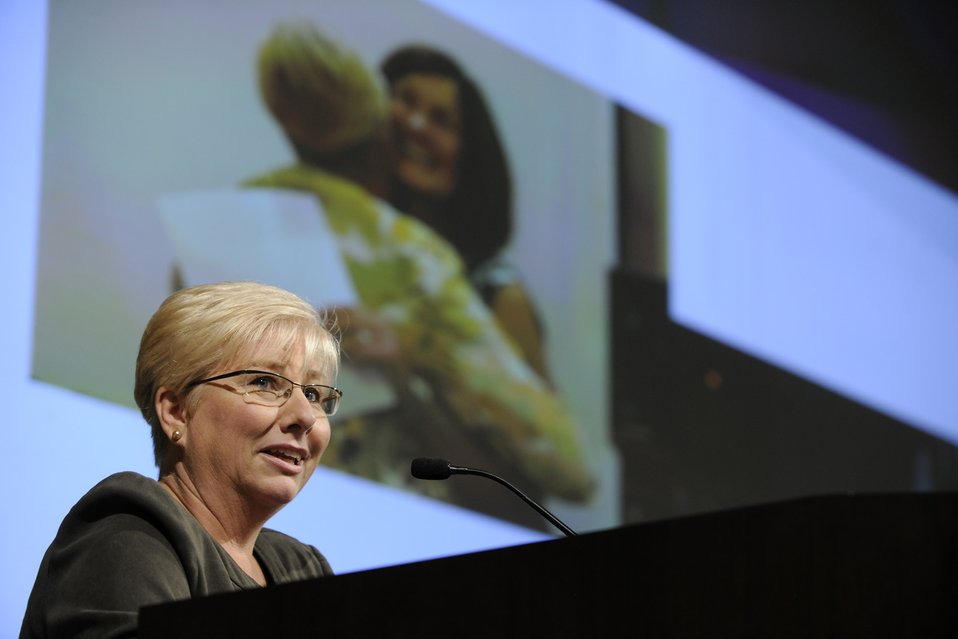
Caring for People

Paula Roy, wife of Chief Master Sergeant of the Air Force James Roy, makes remarks from a senior spouse perspective at the Caring for People Forum at Joint Base Andrews, Md., on Sept. 26, 2012. This is the fourth annual forum which provides strategies for commanders, leaders and care professionals to help Airmen and their families.